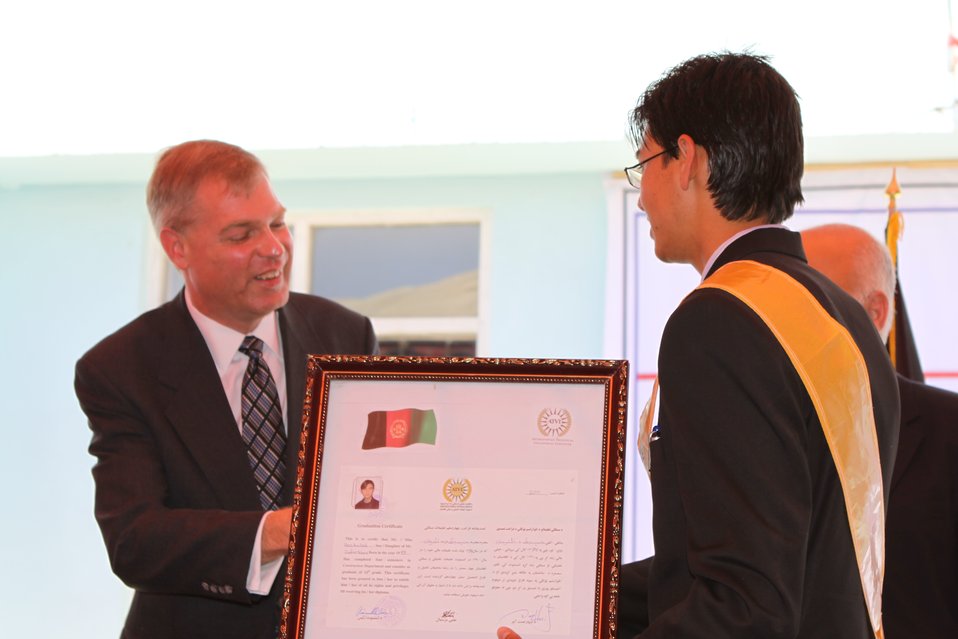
100522 ATVI Graduation 122